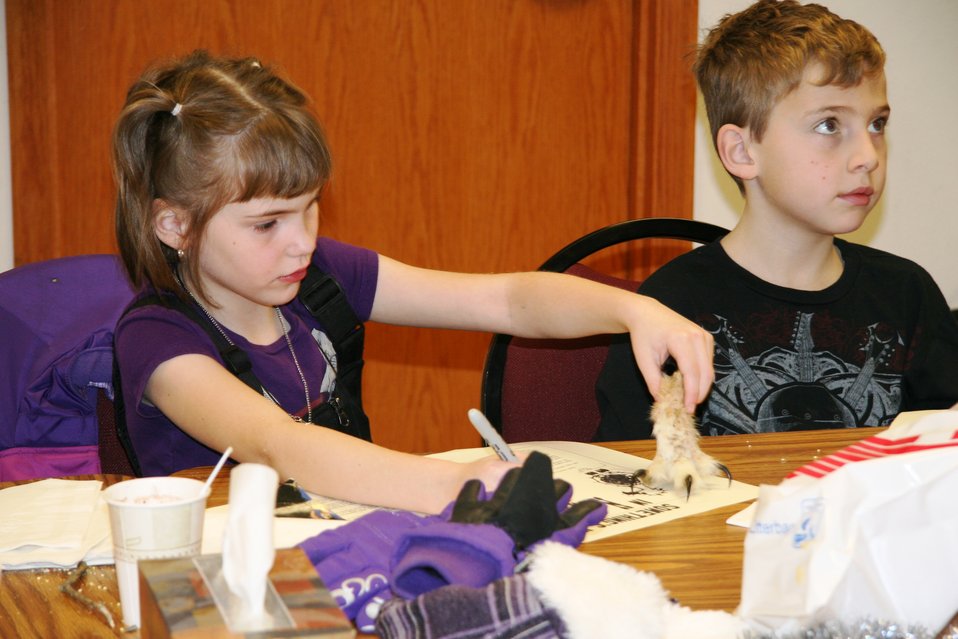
Owl Claw Adpatations

Discussing adaptations owls and raptors have developed for grasping and eating their prey.